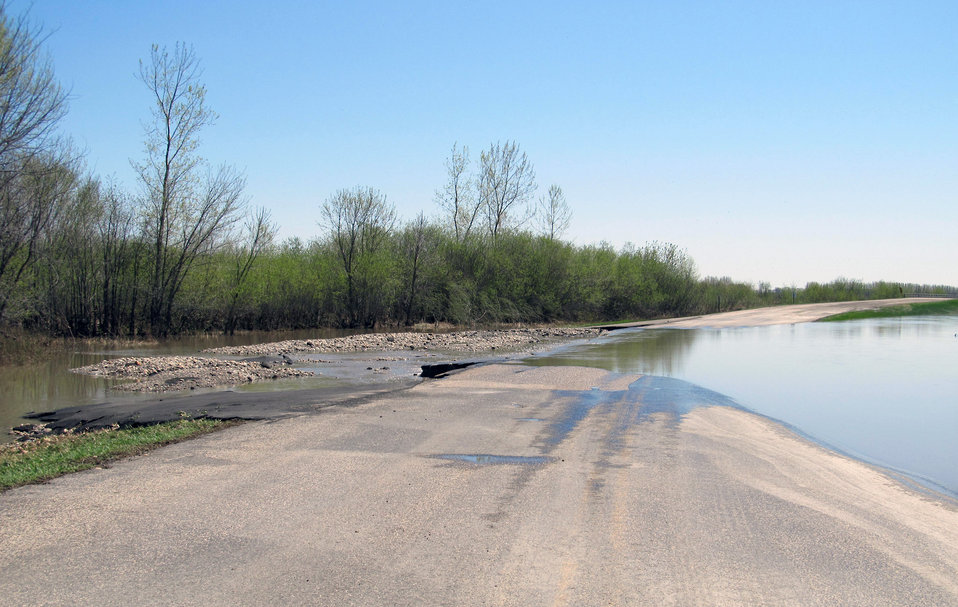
Flooding and water damage in the Park and Tongue River Watersheds located in Cavalier, Pembina and Cavalaier Counties in ND on Thursday, May 23, 2013.